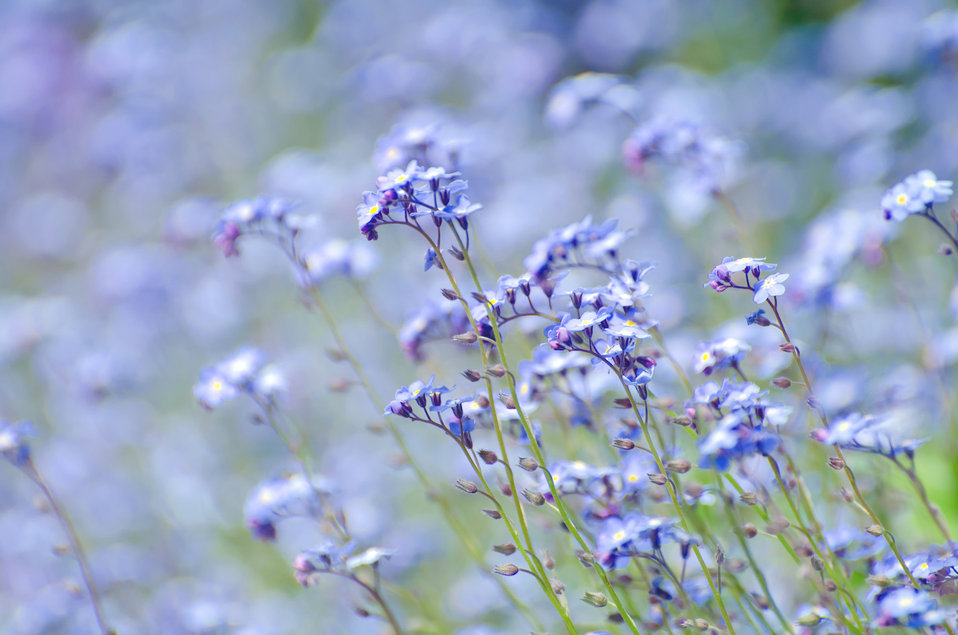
Flowers on the meadow.